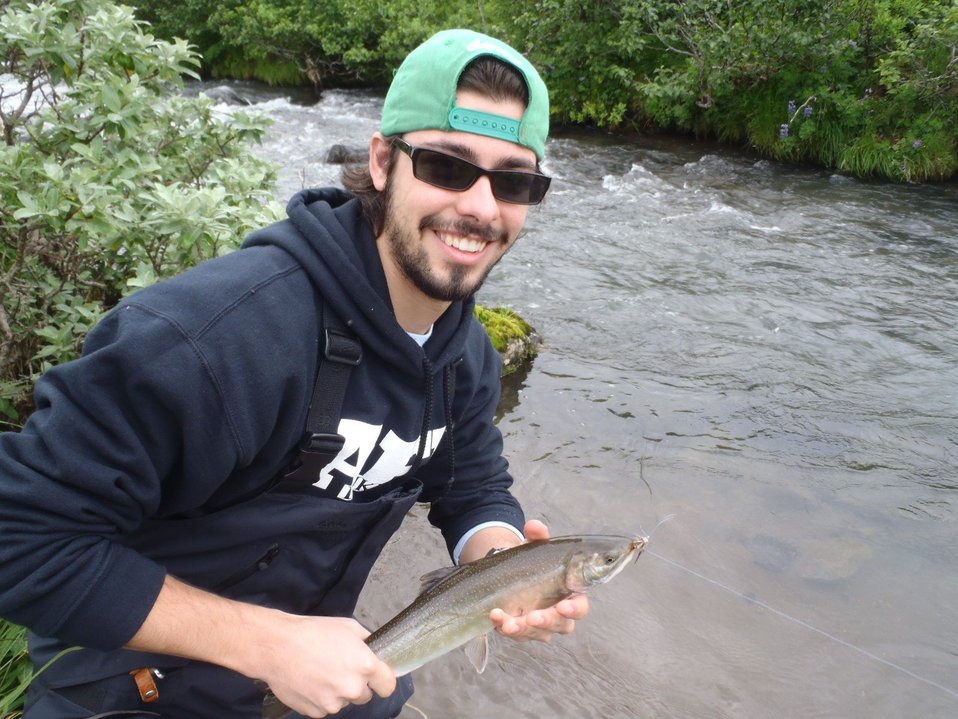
Corey Anco

FW Wilderness Fellow Corey Anco shows off a Dolly Varden char he caught in Alaska.